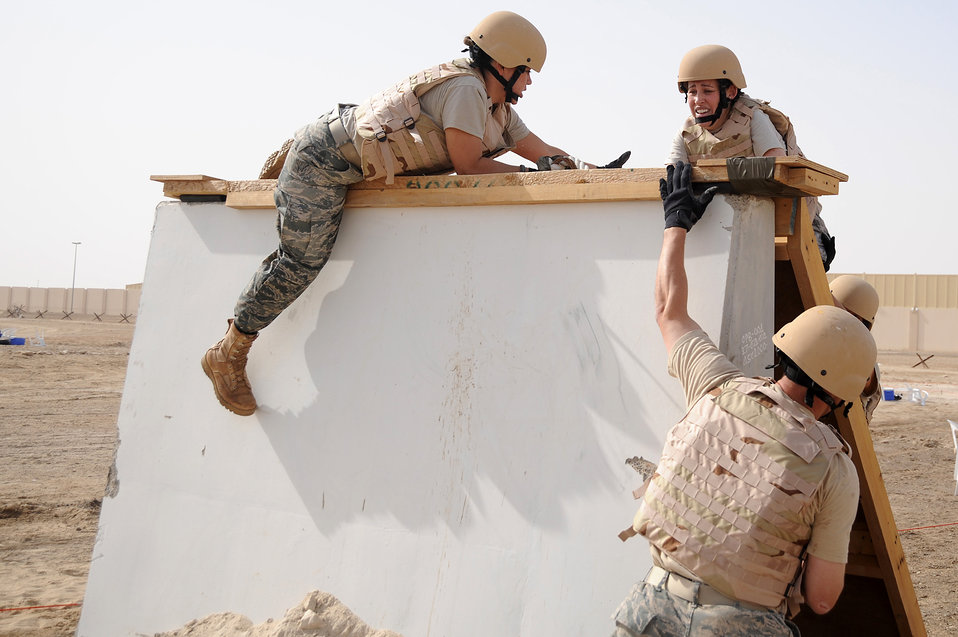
Challenge pushes Airmen, Soldiers

Staff Sgt. Christian Johnson lends a hand to 1st Lt. Miranda Thompson as they use a rope to climb a wall on a Defender Challenge course April 25 at an air base in Southwest Asia. Teams from different units ran the course, testing stamina, strength and brain power. Sergeant Johnson is deployed from Tyndall Air Force Base, Fla. and hails from Brownsville, Texas. Lieutenant Thompson is deployed from Malmstrom AFB, Mont. and hails from Fleshing, Ohio. Both are assigned to the 380th Expeditionary Mission Support Group.